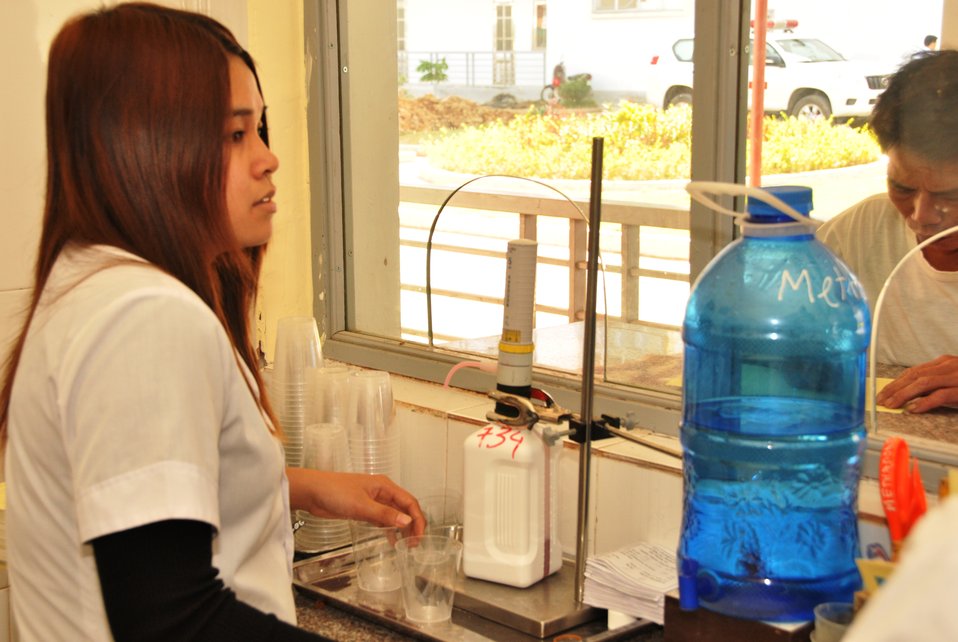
Patients receive methadone treatment in Dien Bien